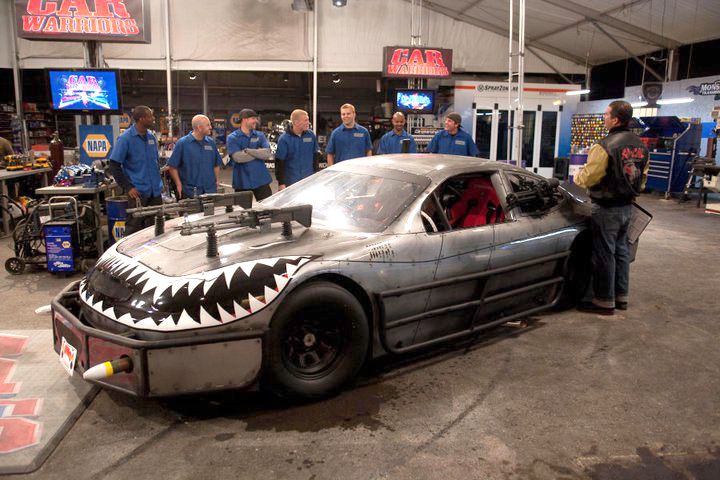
Car Warriors

A team of Airmen from Edwards Air Force Base, Calif., stand behind their four-wheeled